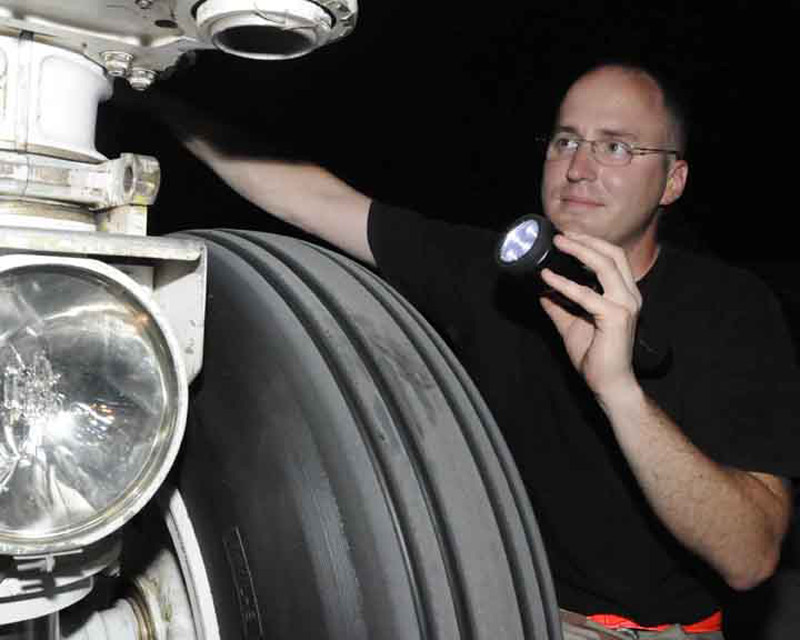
Nocturnal workers

Staff Sgt. Chad Arrowsmith inspects the aircraft wheel and tire ensemble of a KC-135 Stratotanker with a flashlight for higher visibility during the night May 29 in Southwest Asia. Nightshift workers take advantage of the lower temperatures and humidity. Sergeant Arrowsmith is a a KC-135 crew chief deployed from Grand Forks Air Force Base, N.D.